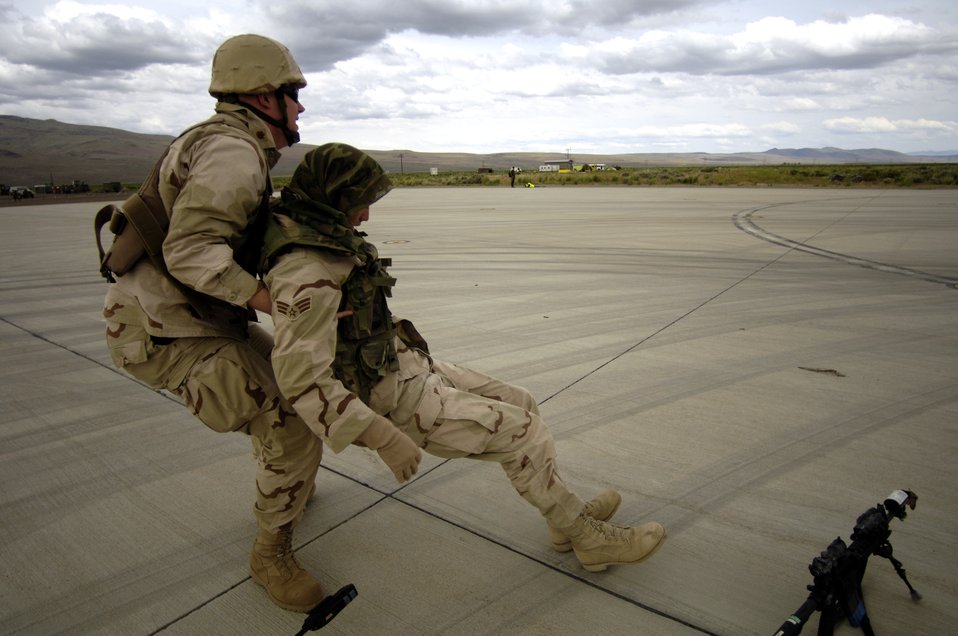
Lightning Fury

Maj. Christopher Bird rescues a